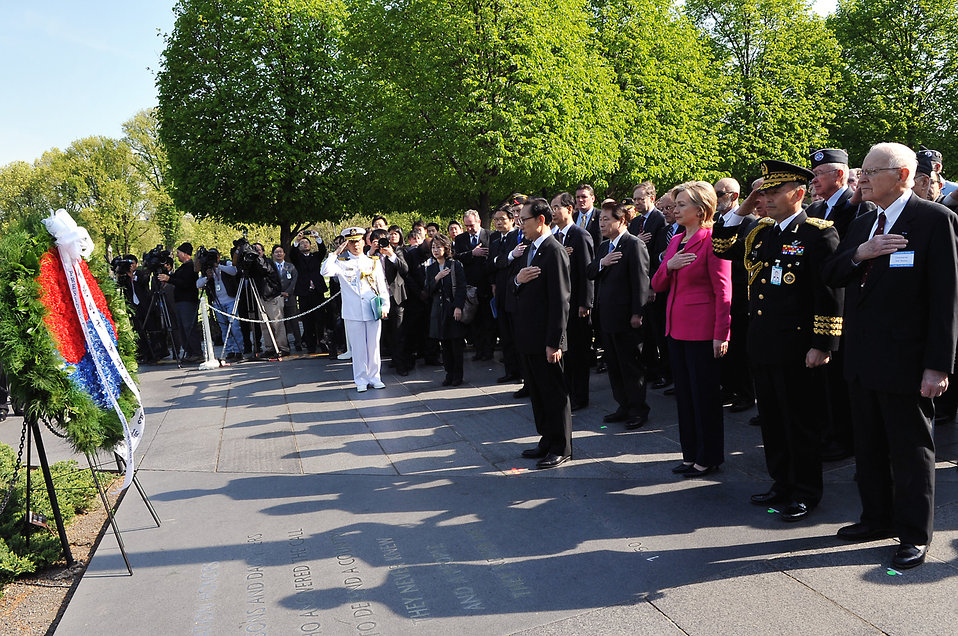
Secretary Clinton Marks 60th Anniversary of the Korean War

U.S. Secretary of State Hillary Rodham Clinton participates in a wreath laying ceremony with Korean President Lee Myung-bak on the 60th Anniversary of the Korean War, at the Korean War Memorial in Washington, DC April 12, 2010.